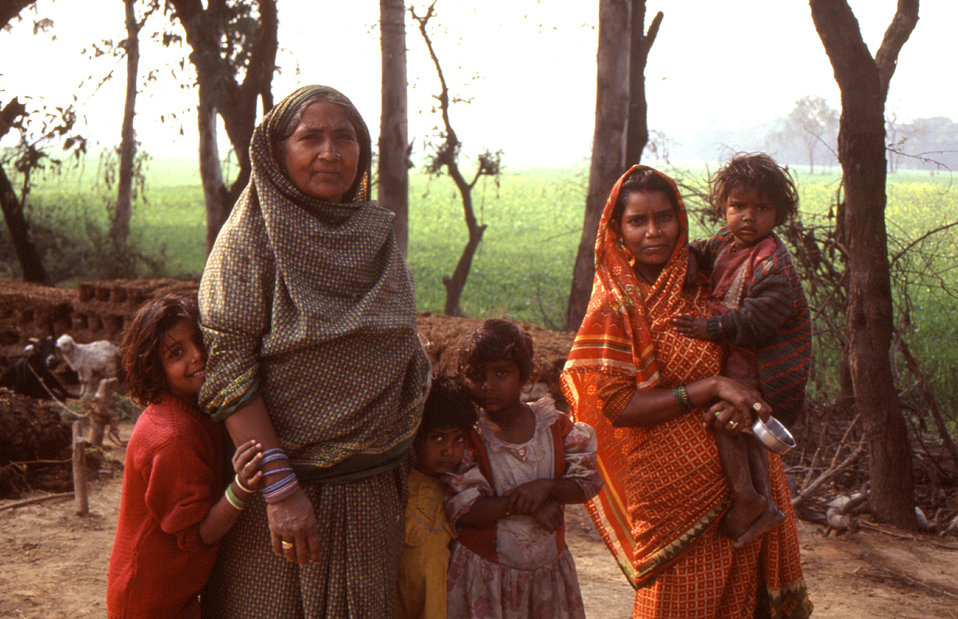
This 2000 image depicted family members from the rural area of Uttar Pradesh, India. The group consisted of four young children and two adult women. The photograph was presented by Chris Zahniser, B.S.N., R.N., M.P.H., a STOP Transmission of Polio (STOP) immunization initiative team member and photographer. Ms. Zahniser was at the time assigned to the state of Uttar Pradesh in northern India, and spent three months working in the Districts of Gorakhpur and Deoria.